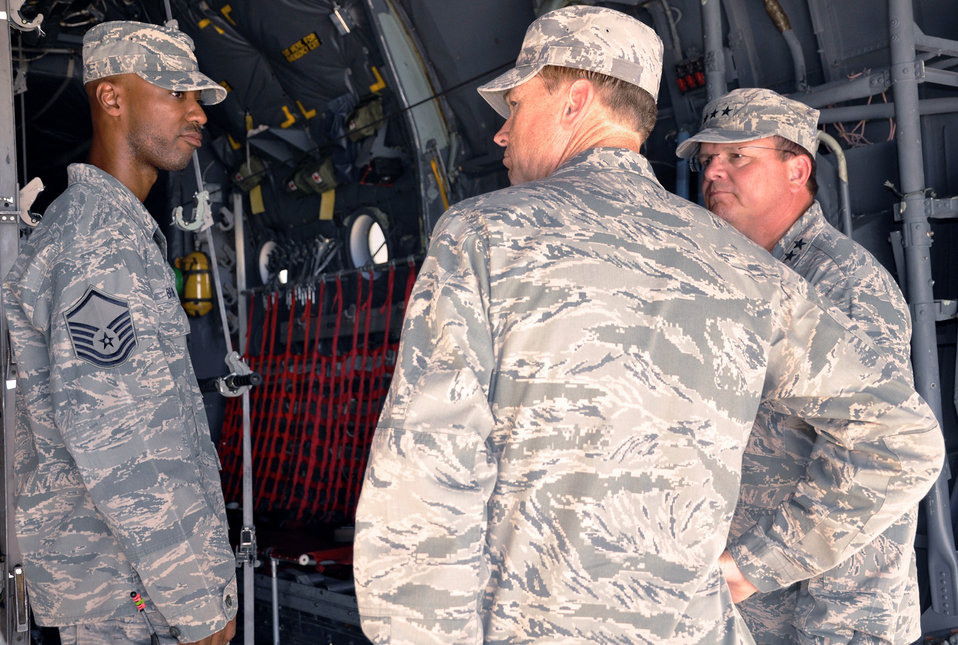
Medical readiness center

Master Sgt. Ricardo Brown shows the C-130 Hercules mockup to Brig. Gen. Darryl W. Burke (center) and Lt. Gen. (Dr.) Charles Green (right) during a tour of the new Medical Readiness Training Center June 25, 2010, at Camp Bullis, Texas. Sergeant Brown is a medical readiness trainer for the 882nd Training Group. General Burke is the 82nd Training Wing commander. General Green is the Air Force Surgeon General.